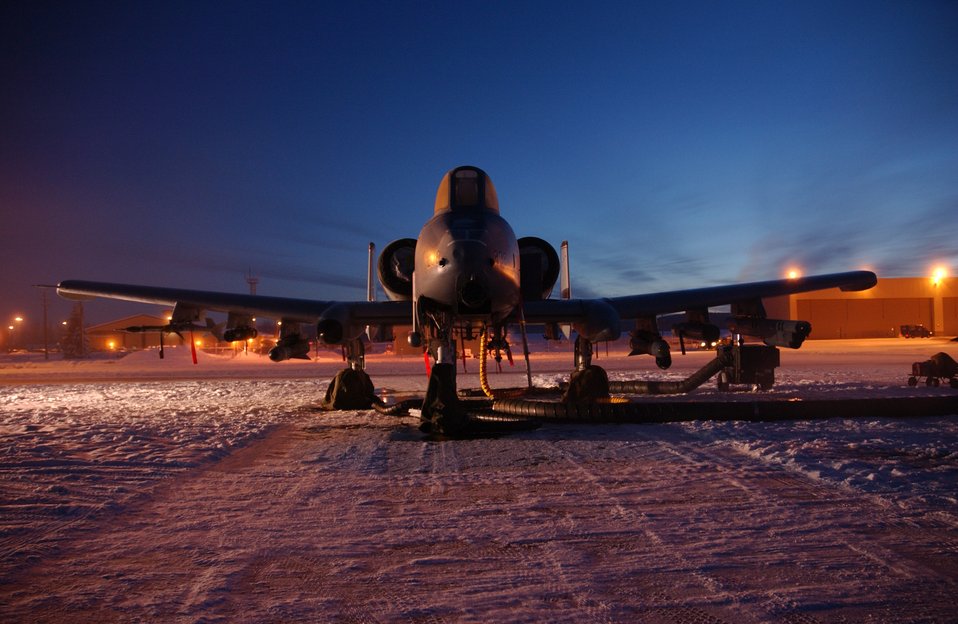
Ready to go

EIELSON AIR FORCE BASE, Alaska -- An O/A-10 Thunderbolt II stands ready just before a training mission here Dec. 21. The aircraft is assigned to the 354th Fighter Wing and its primary missions include air-strike control, close-air support, target interdiction, joint-air attack, combat escort, and combat search and rescue.